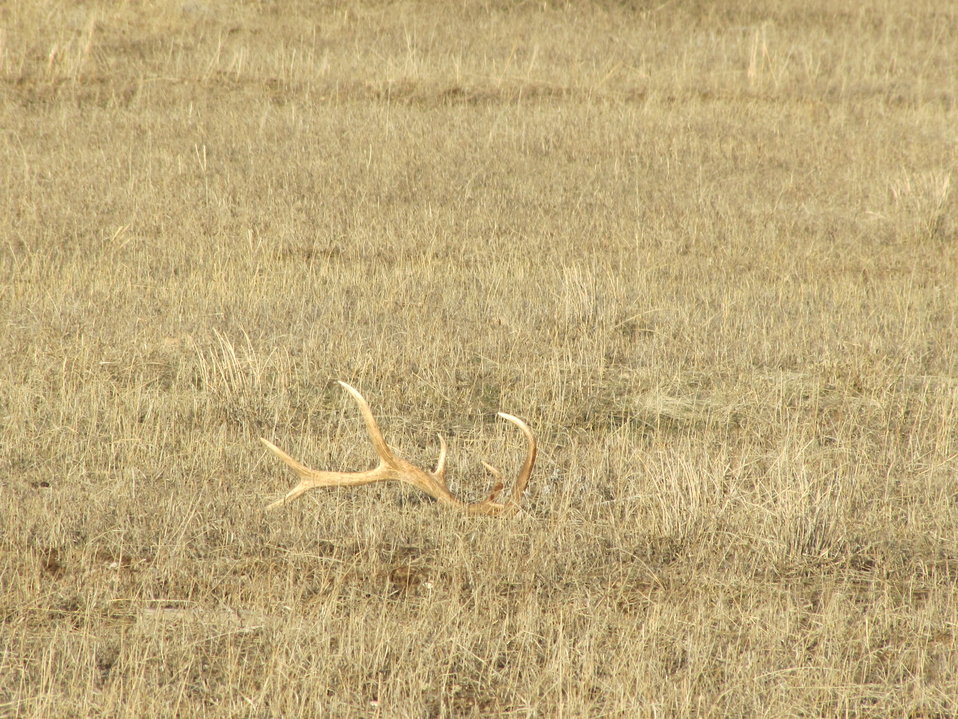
Antlers Blend in with the Surroundings

Not only can antlers blend in with snow, but they can be difficult to see in dried grass. They pose a risk to equipment during winter management operations such as supplemental feeding or spring projects like harrowing and irrigating.